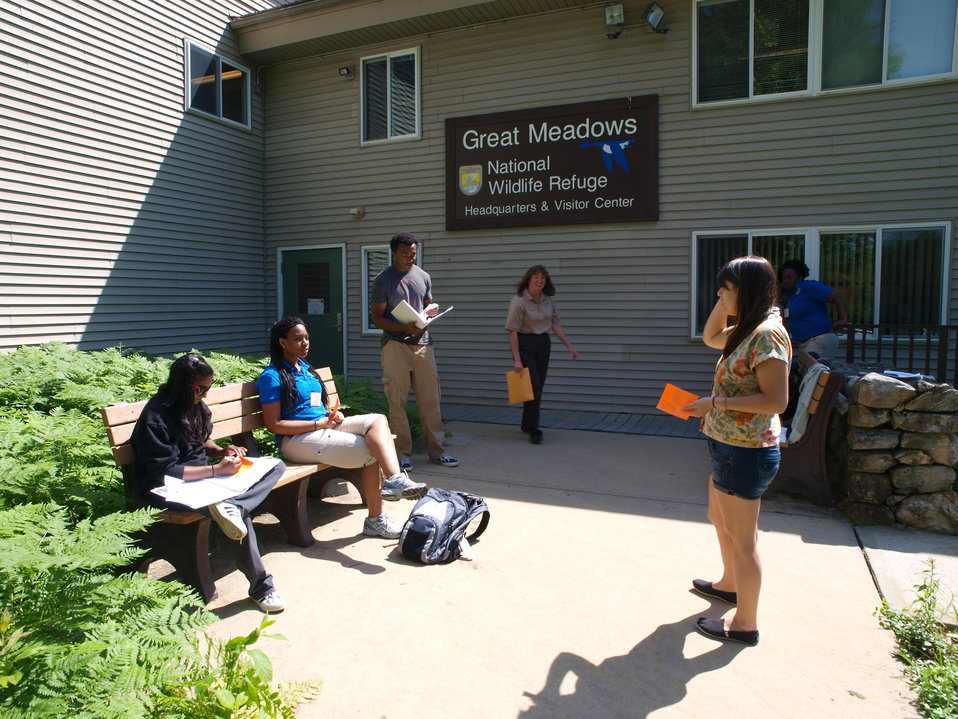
Challenge Project Presentations

Last minute preparations for the Challenge presentations!